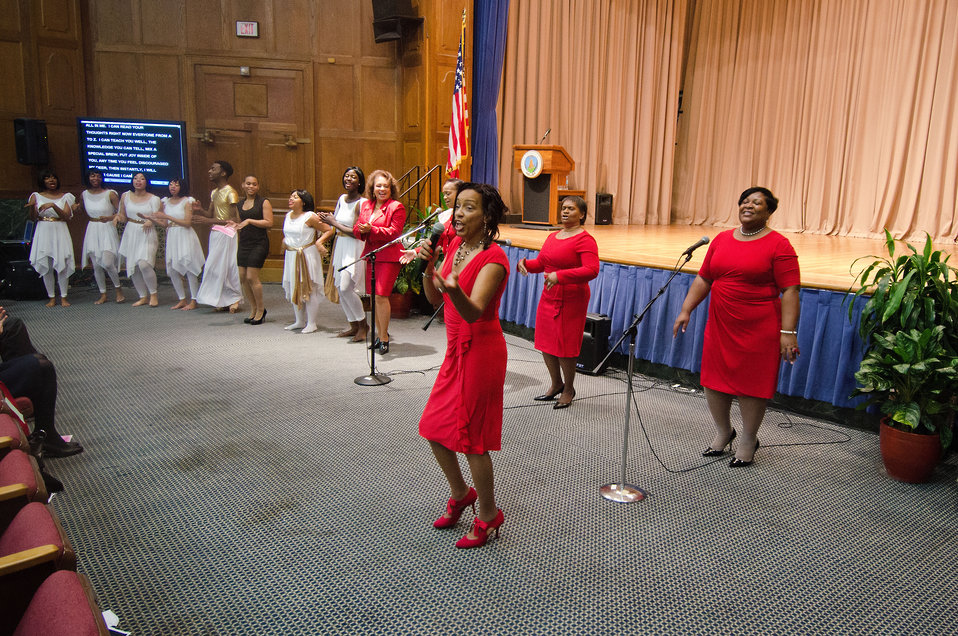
Barbara Smith, Equal Employment Opportunity Specialist, Risk Management Agency and back up singers: Pamela Carter, Rita Meade, Reedema Rock and Daphne Maxwell Reid offered the closing entertainment by singing and involving the audience in a rendition of “I Am Every Woman” at the 2012 Women’s History Month Celebration, “Women’s Education – Women’s Empowerment” held at the United States Department of Agriculture on Thursday, March 8, 2012 in Washington, D.C.